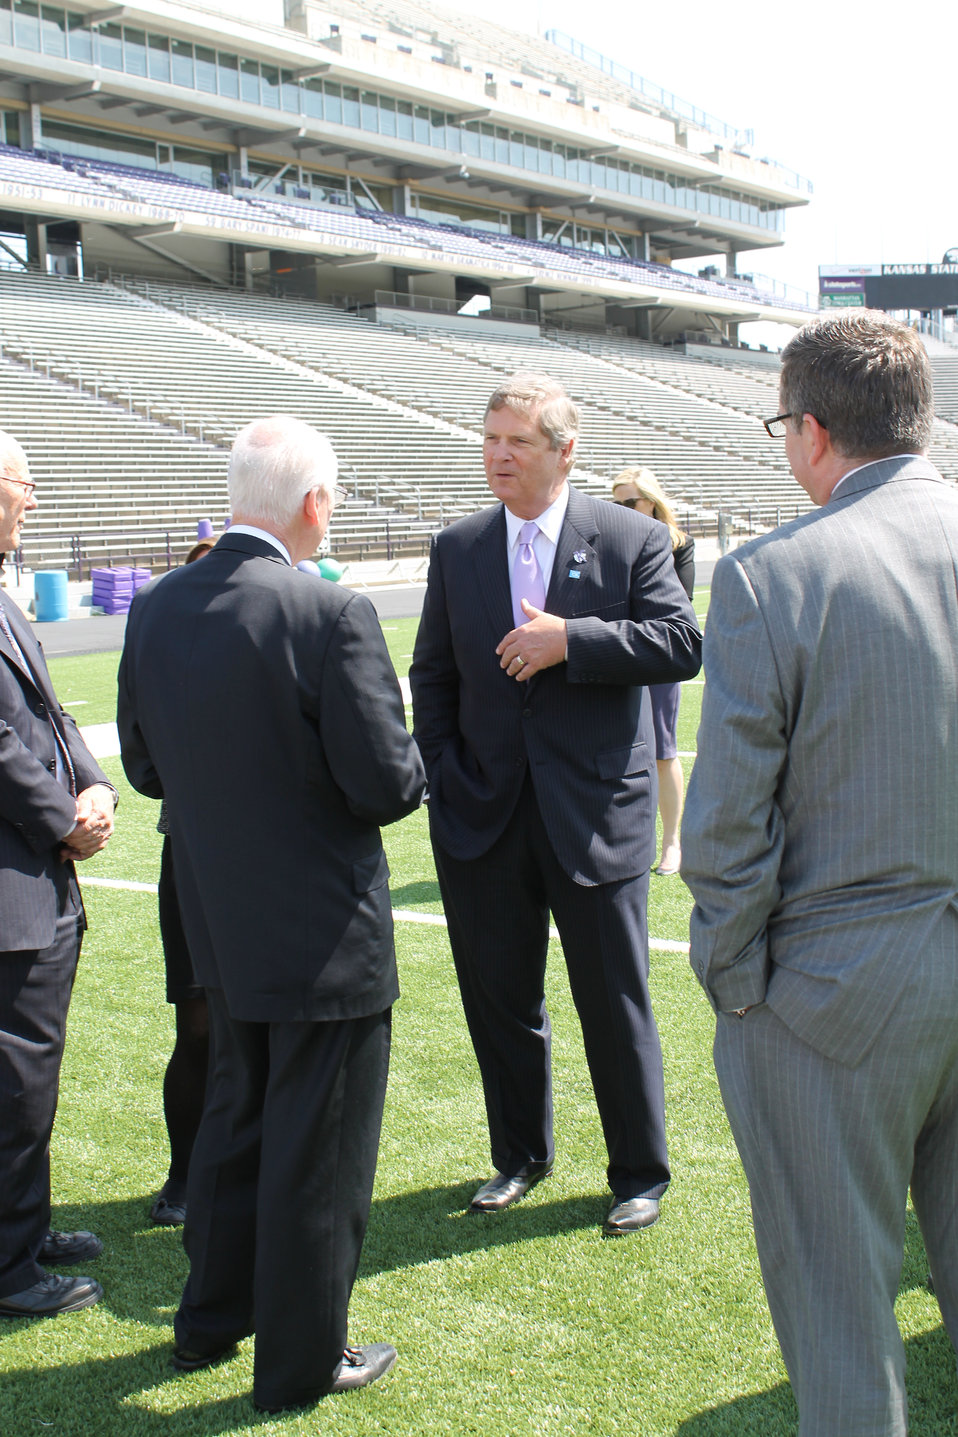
Agriculture Secretary Tom Vilsack visits the Bill Snyder Family Football Stadium at Kansas State University, in Manhattan, KS, on Tuesday, April 10, 2012.